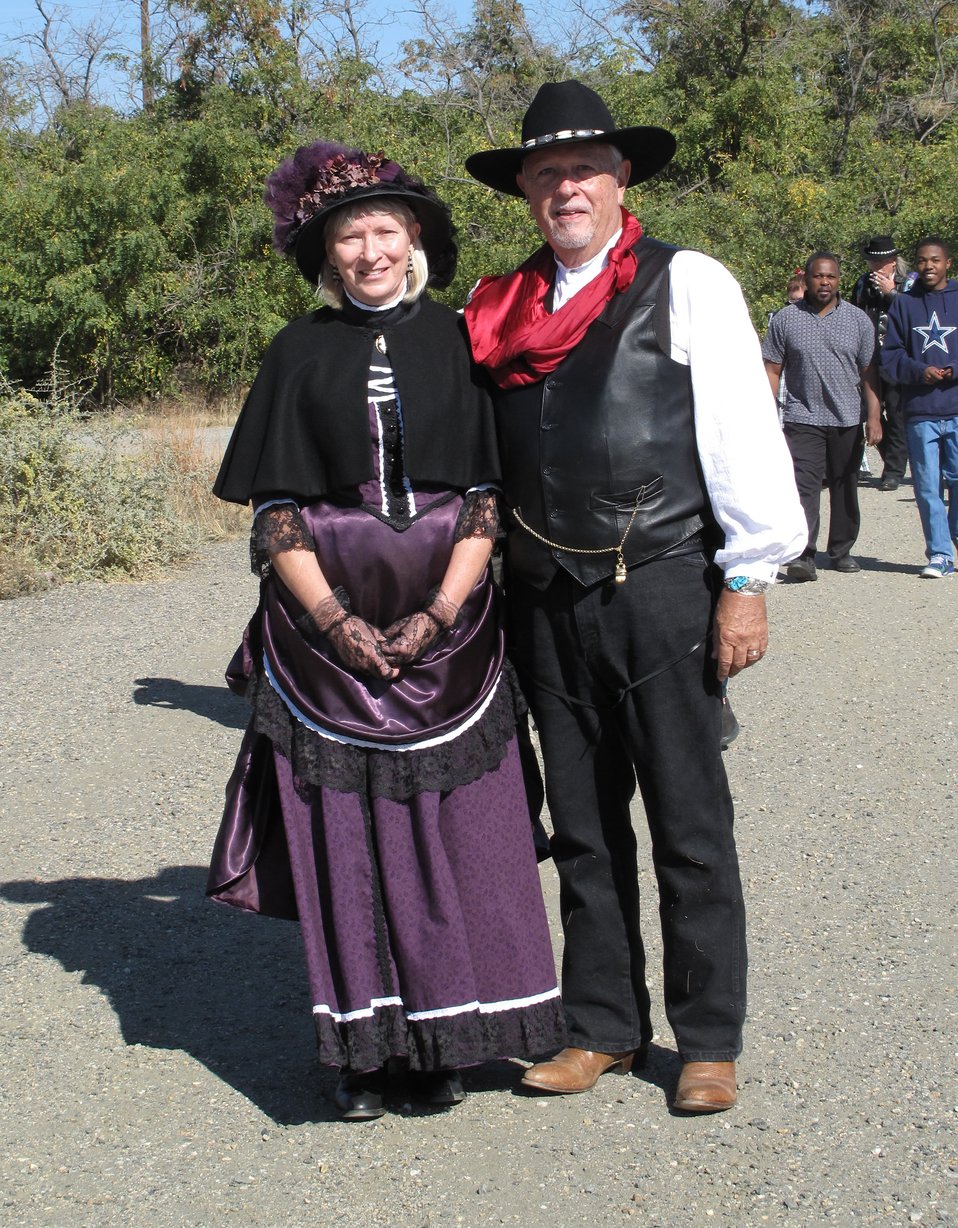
Refuge Round-Up 2010

The characters from the buffalo soldiers of the American west.